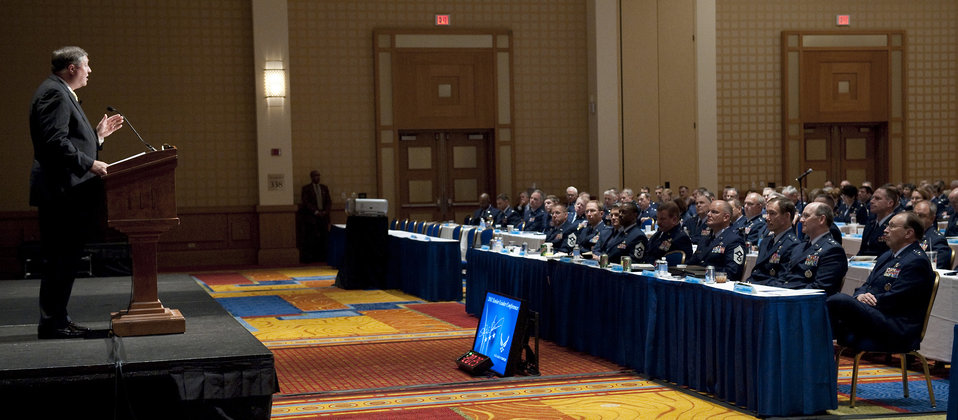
Air Force Reserve Command Senior Leader Conference

Secretary of the Air Force Michael Donley addresses Air Force Reserve Command senior leaders May 16, 2011, during their annual conference in Washington, D.C.